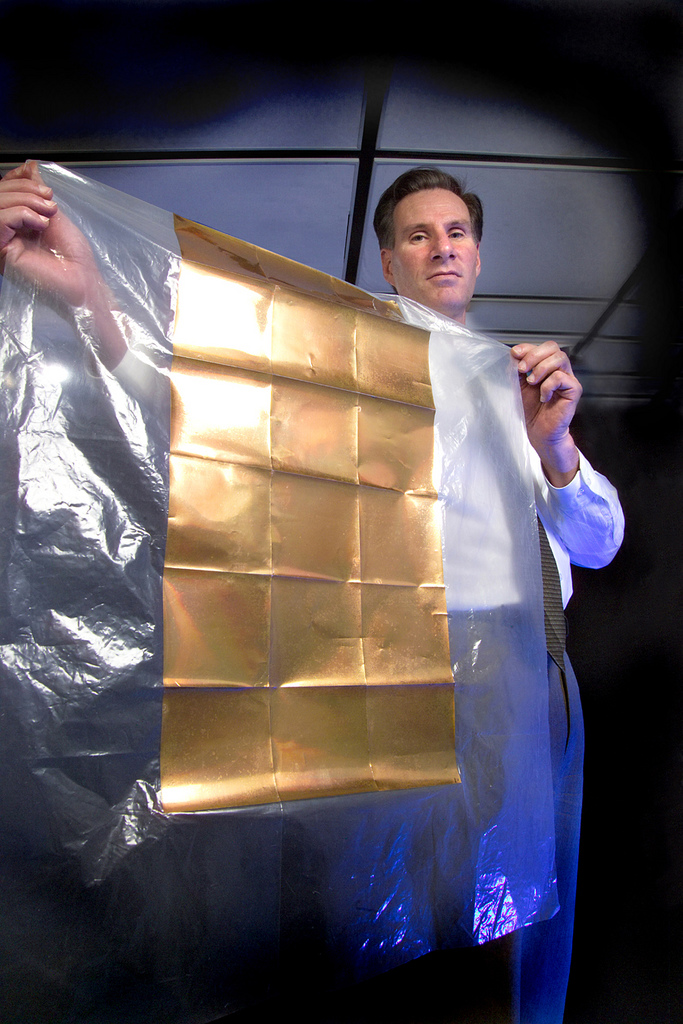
At Idaho National Laboratory, Steve Novack holding a sheet of solar nanoantenna materials.

Research have devised in inexpensive way to produce plastic sheets containing billion of nanoantennas that collect heat energy generated by the sun and other sources. The technology developed at INL, is the first step towards solar energy collector that could be mass-produced on flexible materials. The sheets could one day be manufactured as lightweight 'Skins' that power everything from hybrid cars to ipods with higher efficiency than traditional solar cells.